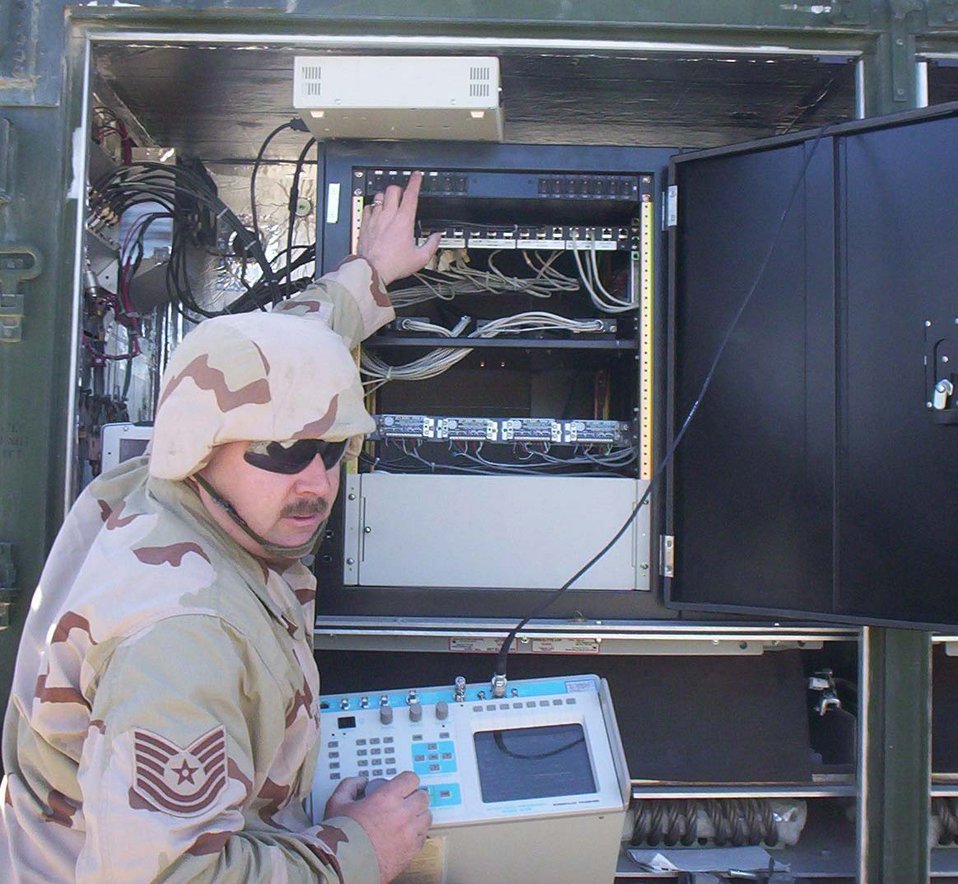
Radio team connects air to ground

BAGRAM AIR BASE, Afghanistan - Tech. Sgt. Hank O'Neill, 455th Expeditionary Mission Support Squadron Joint Radio Relay section chief, tests radio equipment on a JR2 at a remote site in Afghanistan. The system has similar capabilities to the E-3 Sentry airborne warning and control system. Sergeant O'Neill is deployed from Travis Air Force Base, Calif.